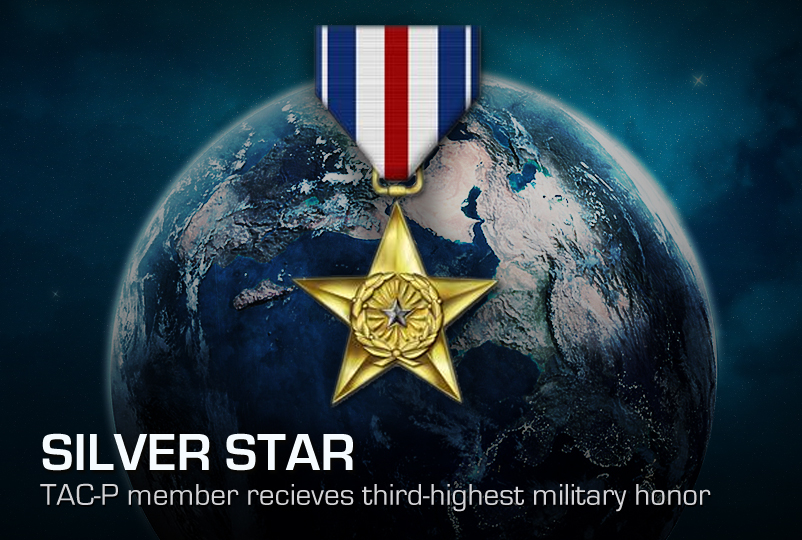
Silver Star